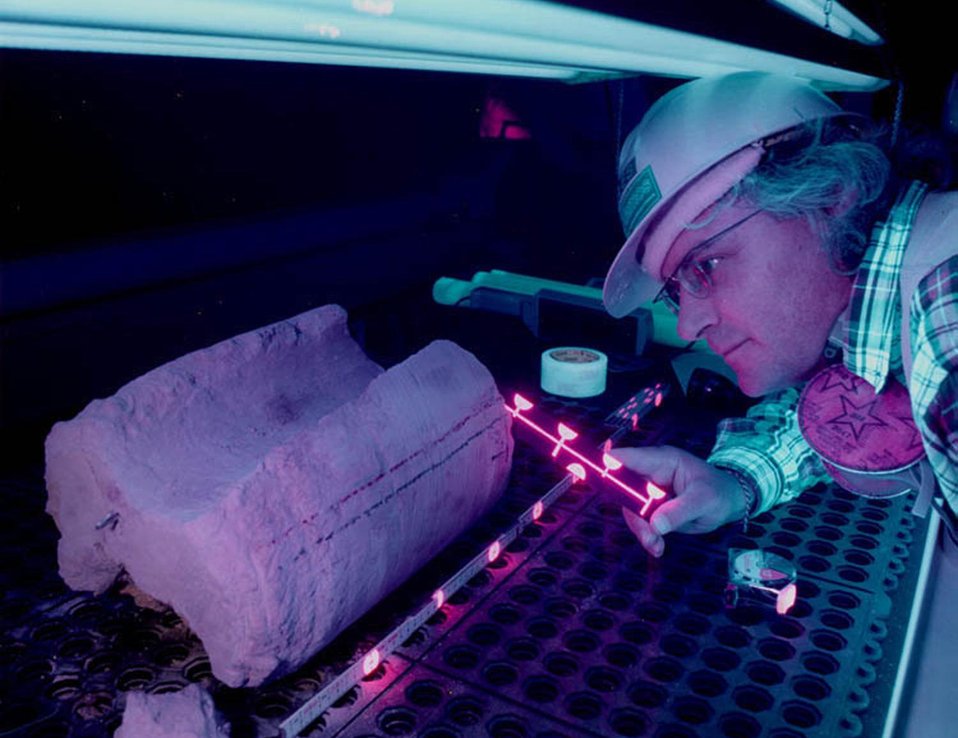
SCIENTIST USES ULTRA VIOLET LIGHT TO STUDY HOW FLUIDS MOVE THROUGH THE ROCK AT YUCCA MOUNTAIN.

YUCCA MOUNTAIN, SITUATED ON THE SOUTHWEST BOUNDARY OF THE NEVADA TEST SITE, IS BEING EVALUATED FOR SUITABILITY AS THE NATION'S FIRST REPOSITORY FOR HIGH LEVEL NUCLEAR WASTE. STUDIES INCLUDE WEATHER PATTERNS OF THE AREA, SURFACE TESTING OF ROCK, SOIL SAMPLES AND WATER MOVEMENT, AS WELL AS SUBSURFACE ROCK TESTING AT DEEP LEVELS AND LABORATORY ANALYSIS OF SAMPLES.